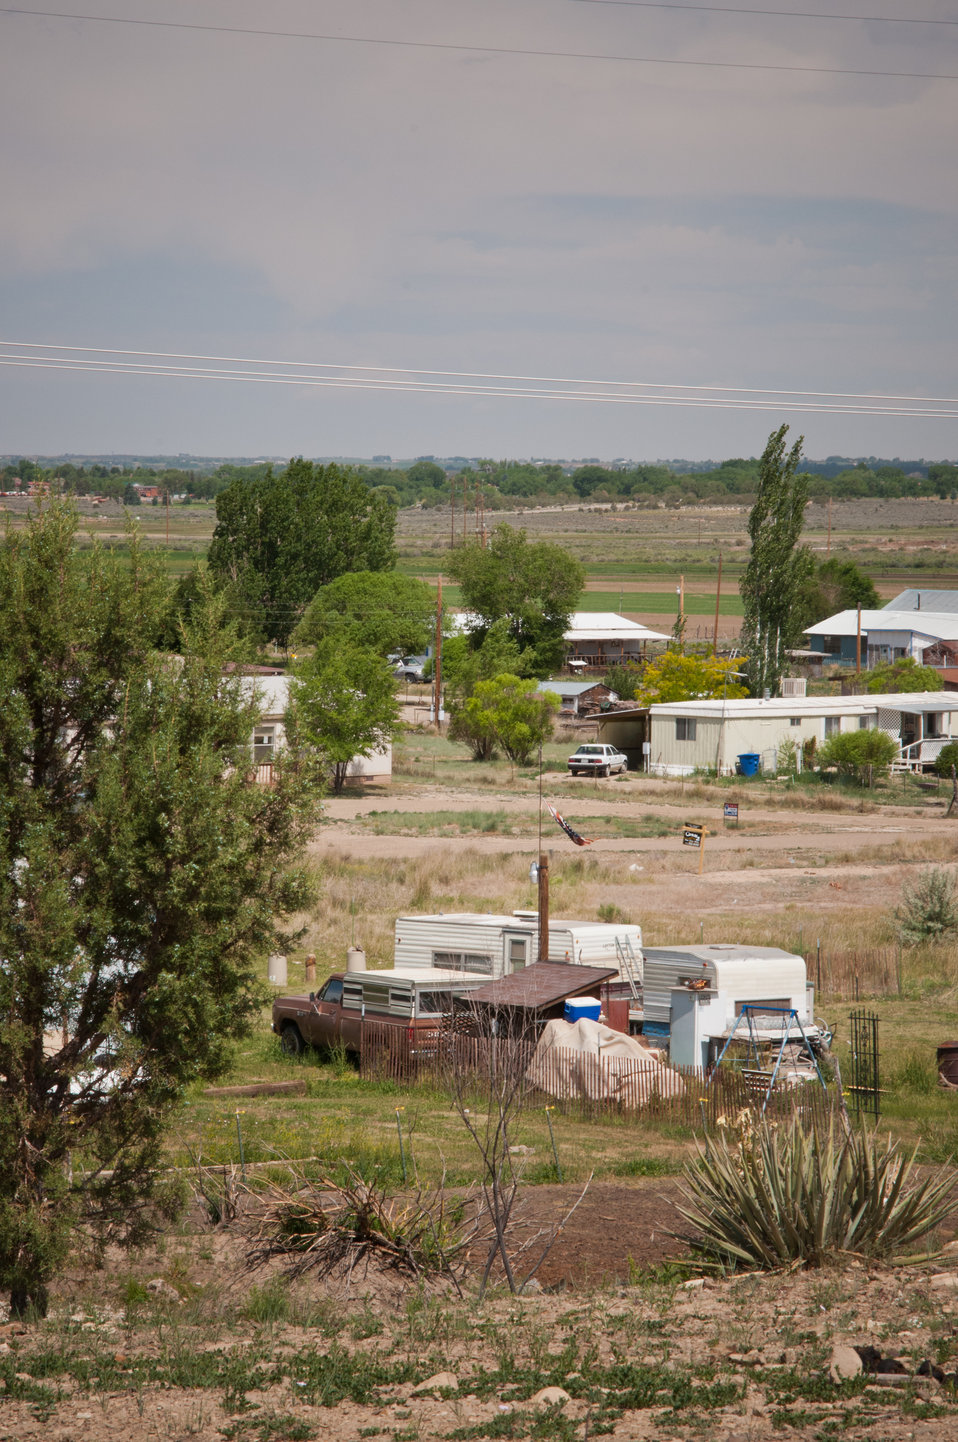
The U.S. Department of Agriculture (USDAS) StrikeForce Initiative in cooperation with public and private organizations offers many economic grants, loans and conservation contracts through USDA's Rural Development (RD) and the Natural Resources of Conservation Service (NRCS) for areas of rural America with a high percentage of people living below the poverty level and considered economically distressed.